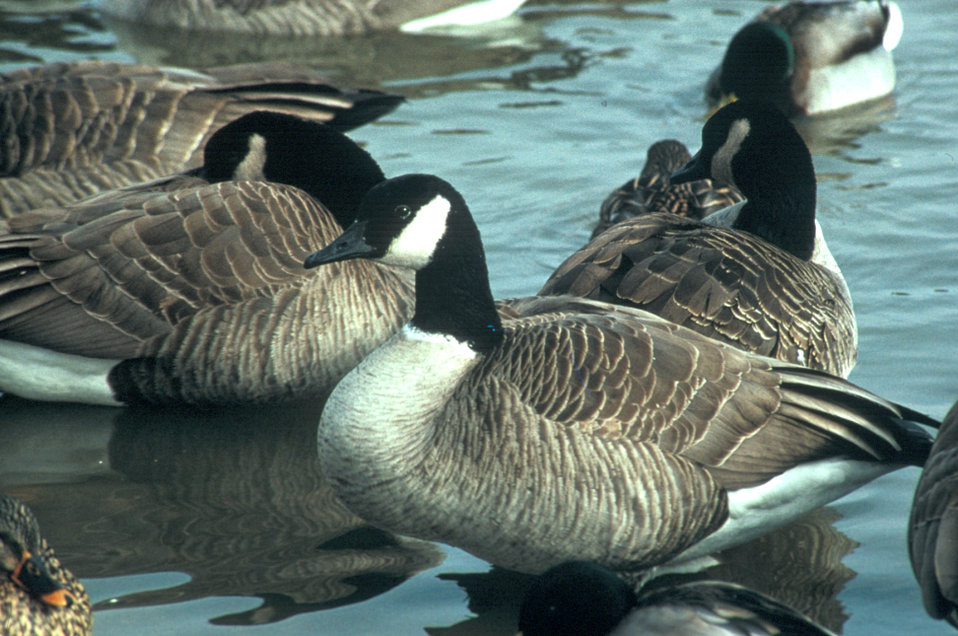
Canada geese

The Canada goose is just one of the species at Blackwater National Wildlife Refuge that could be affected by climate change and sea level rise.